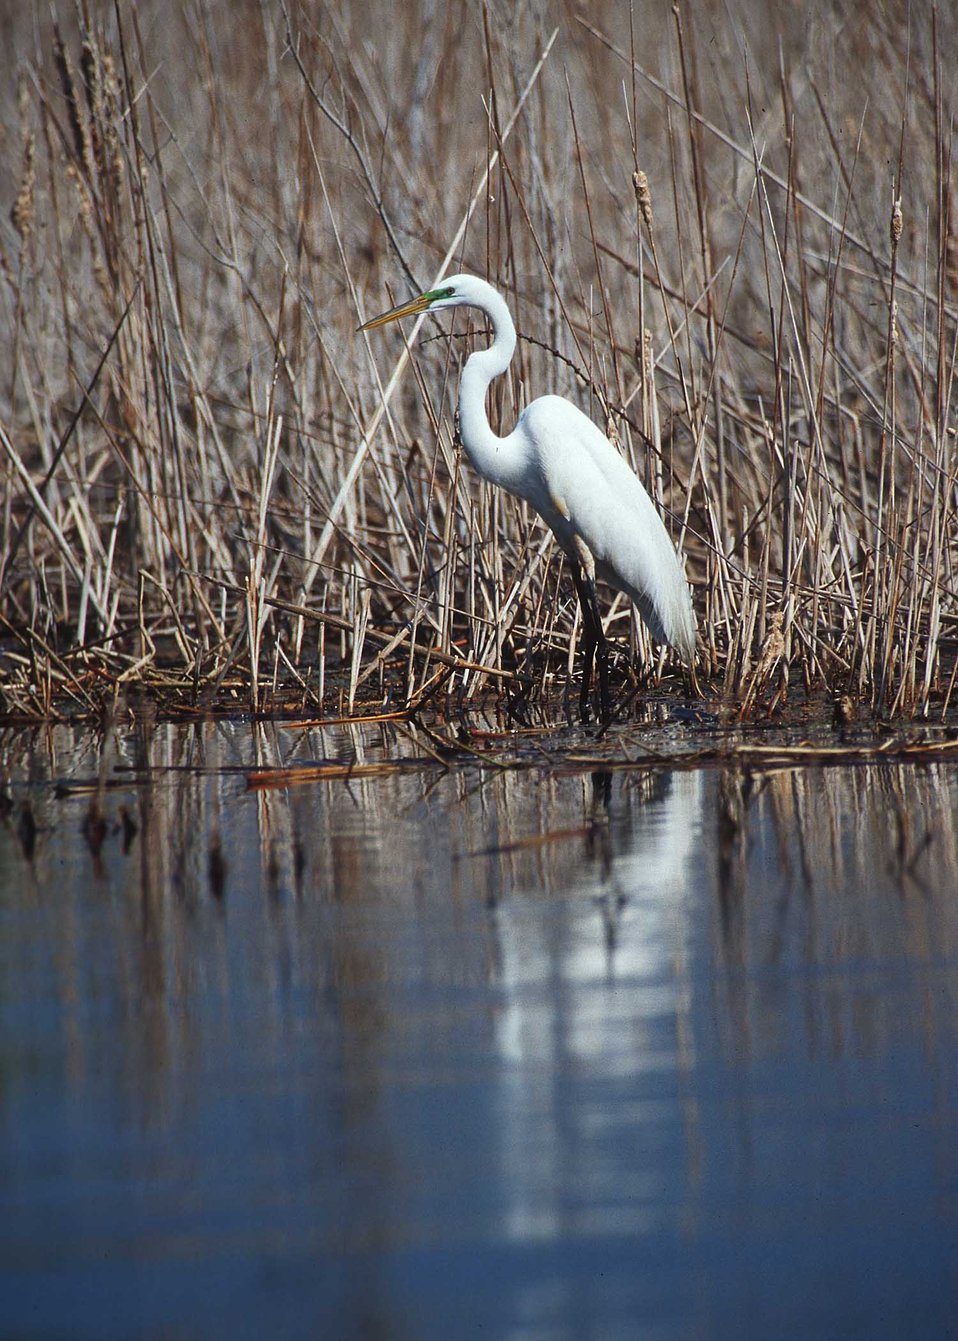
Great egret in the prairie pothole region of South Dakota.